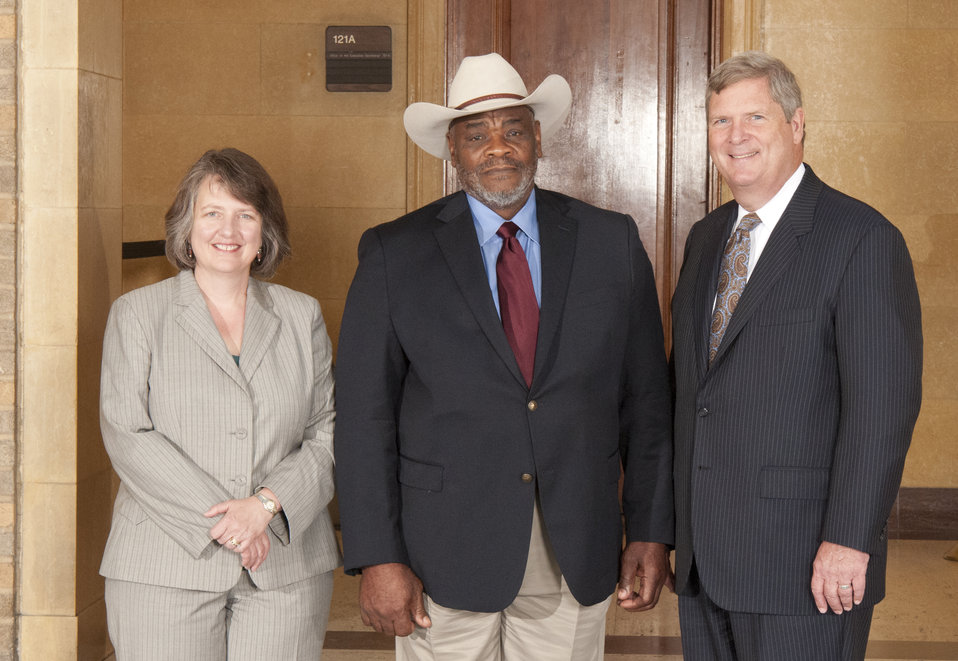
Agriculture Secretary Tom Vilsack and Deputy Agriculture Secretary Kathleen Merrigan with Wade Ross, Texas Small Farmers and Ranchers during the Honor Award group photography on the patio of the U.S. Department of Agriculture in Washington, D.C. on Wednesday, Sept. 12, 2012.